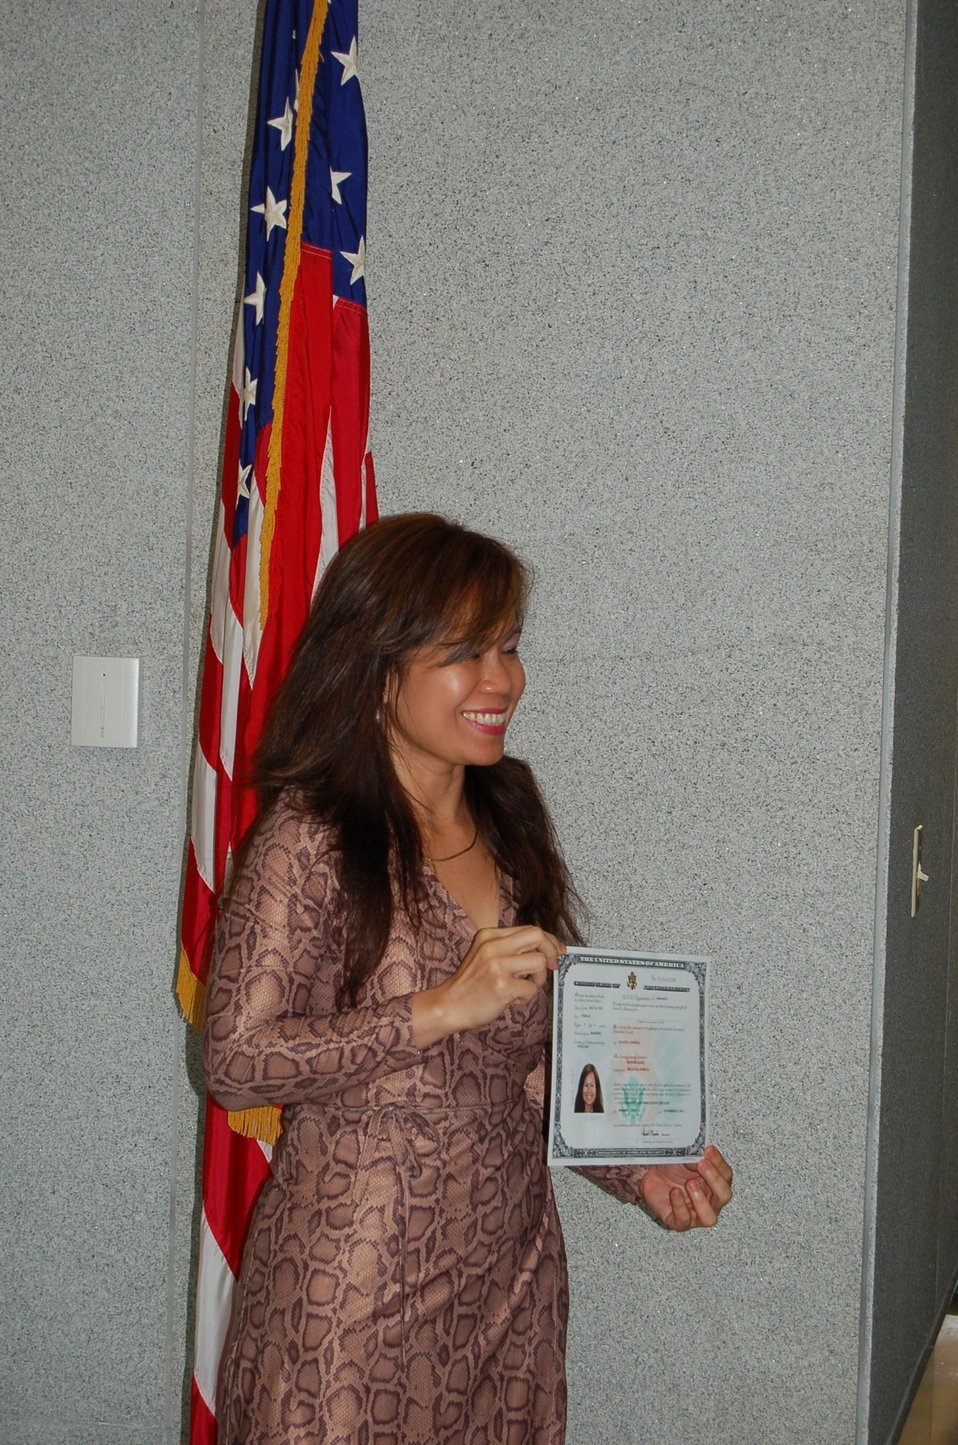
New Citizens